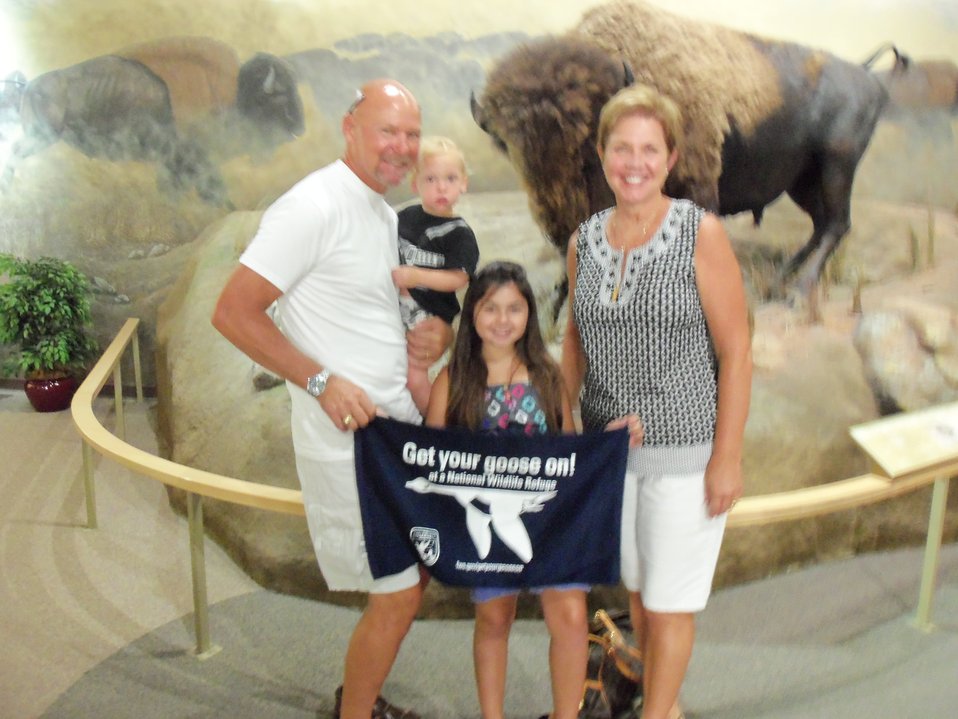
Get Your Goose On!

Wichita Mountains National Wildlife Refuge in Oklahoma.